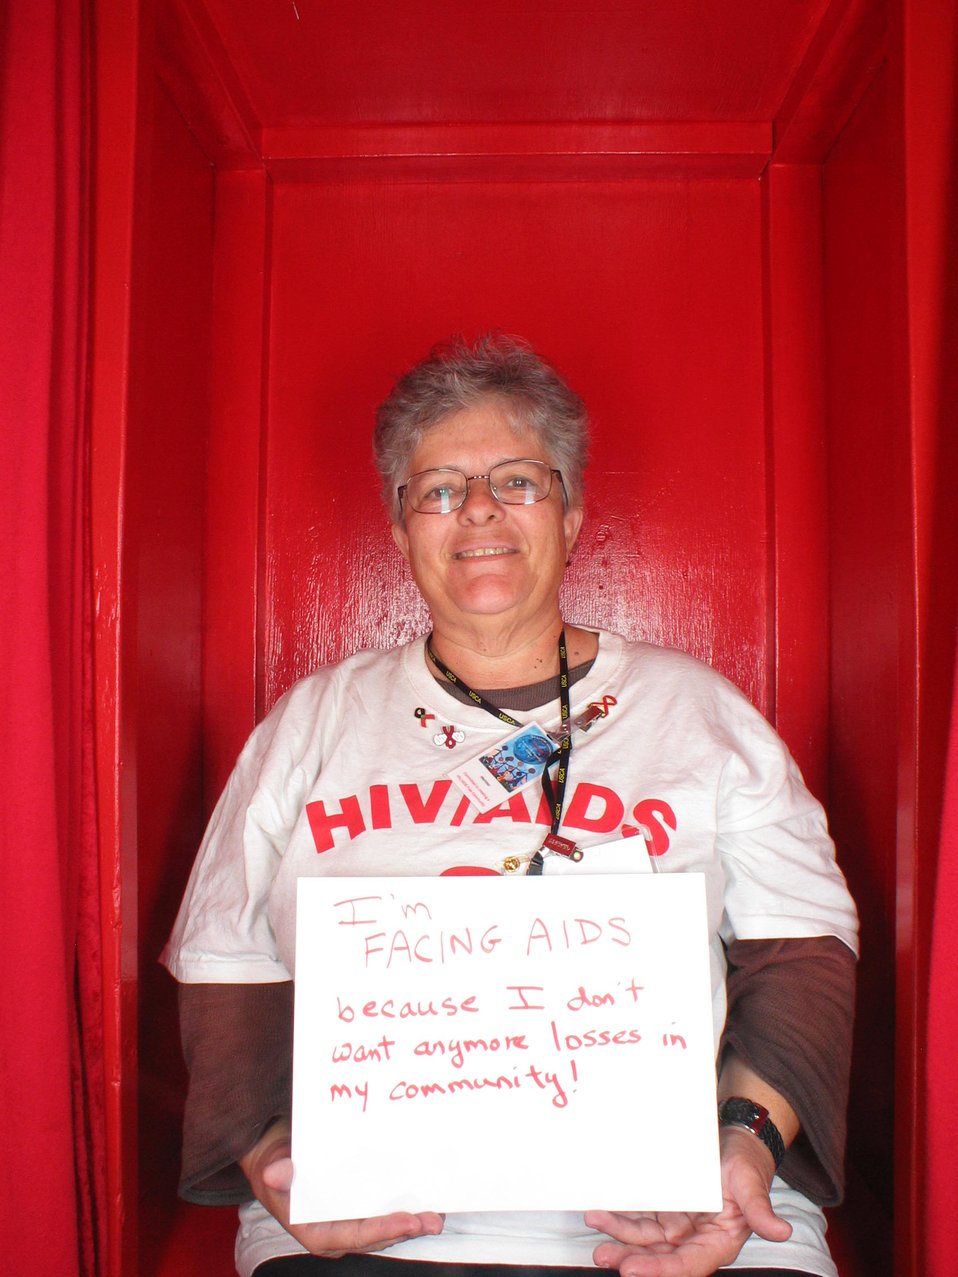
I am Facing AIDS because I don't want any more losses in my community.